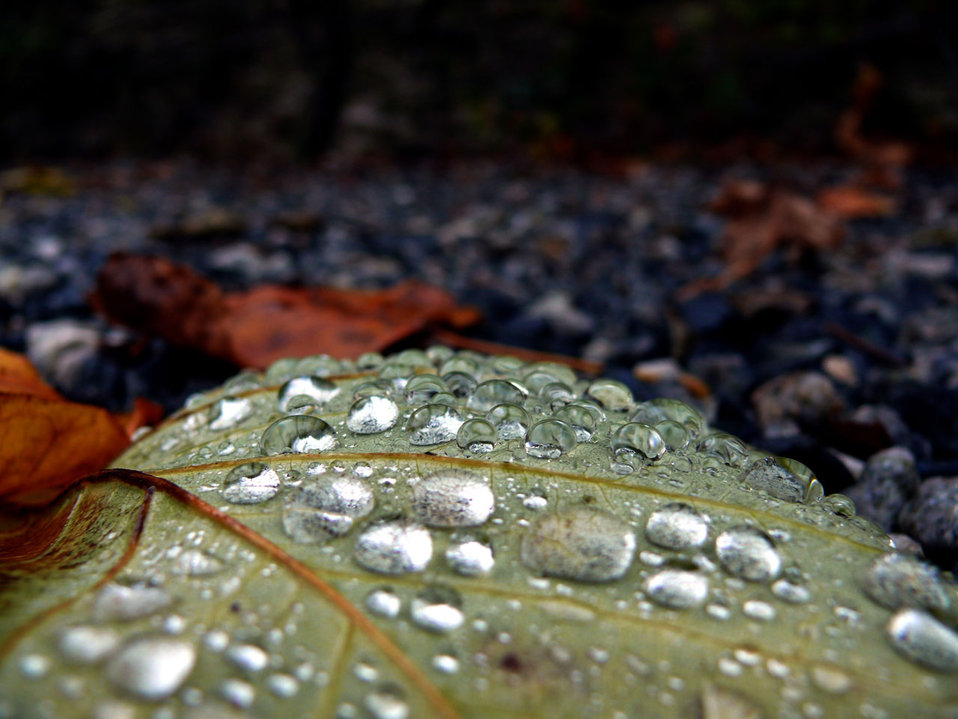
Drops on leaf.